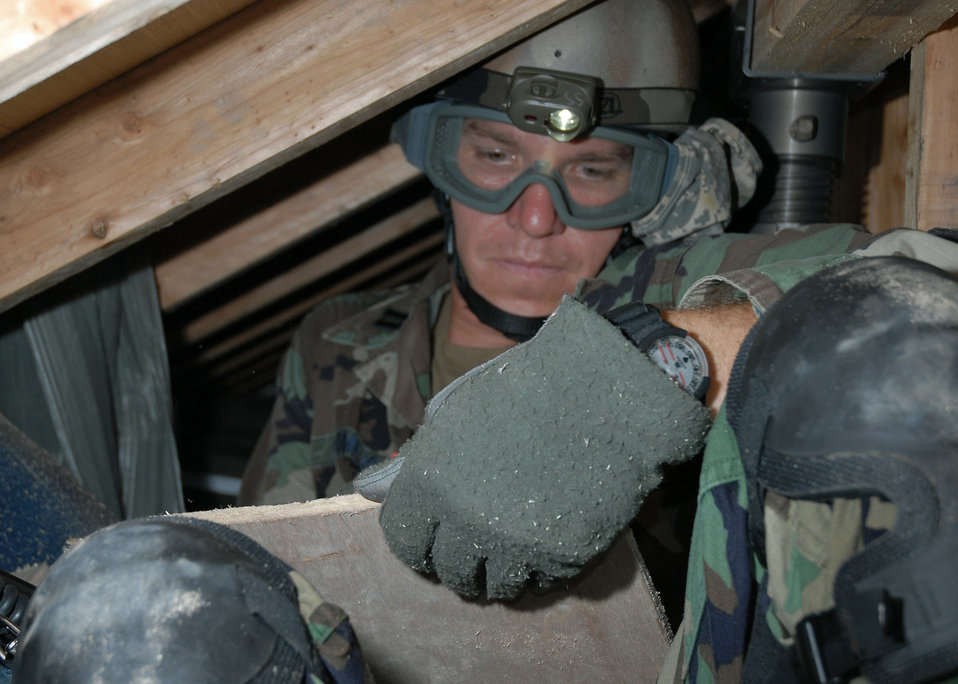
Confined-space training

Capt. Nicholas Shimkus of the 31st Rescue Squadron at Kadena Air Base, Japan, draws a plan for his team during an exercise scenario that is part of confined-space training Oct. 3. The training prepares the rescue Airmen to execute operations in confined spaces and collapsed structures.